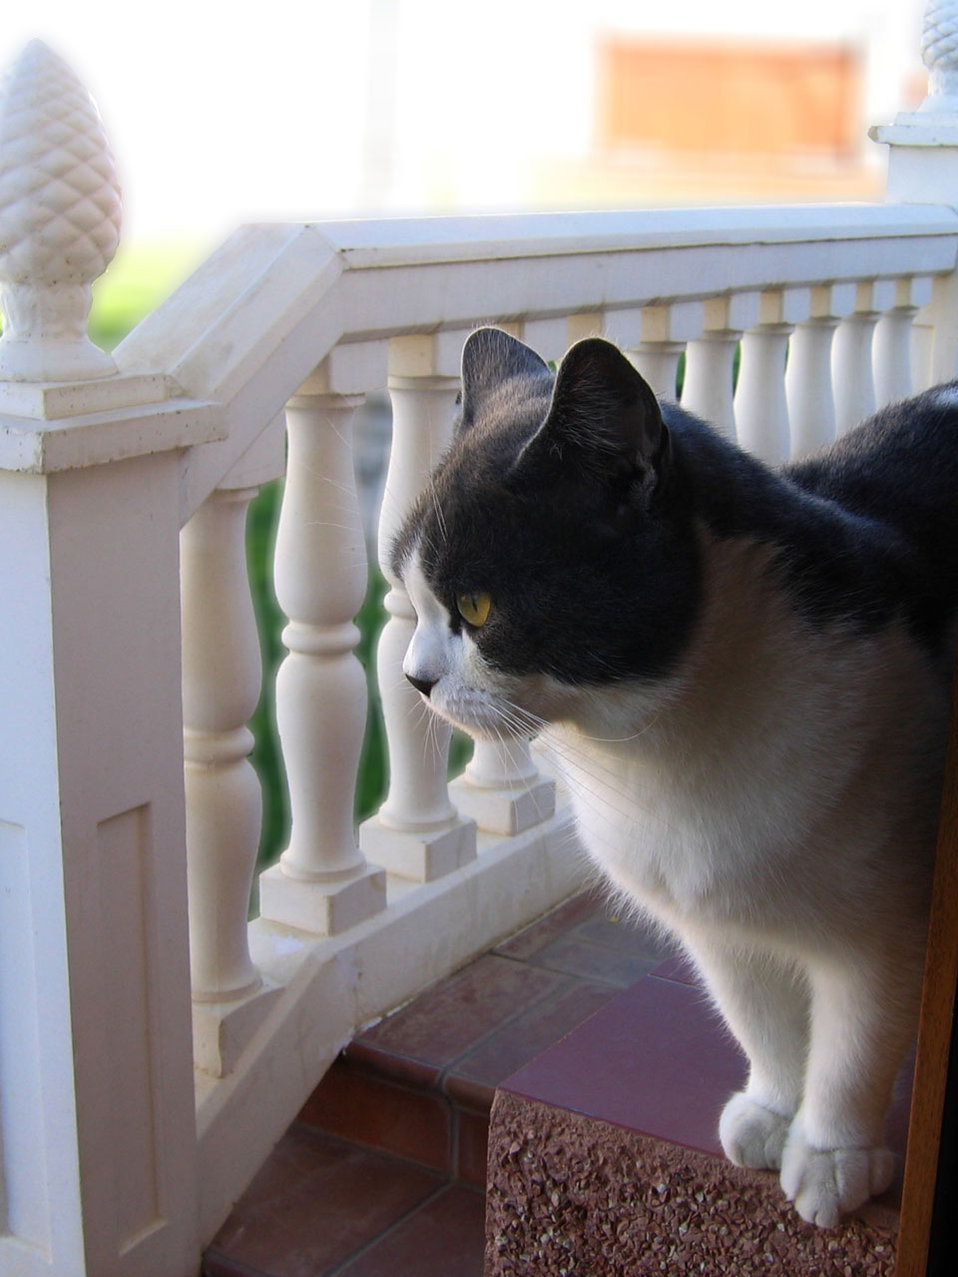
Cat in the garden.